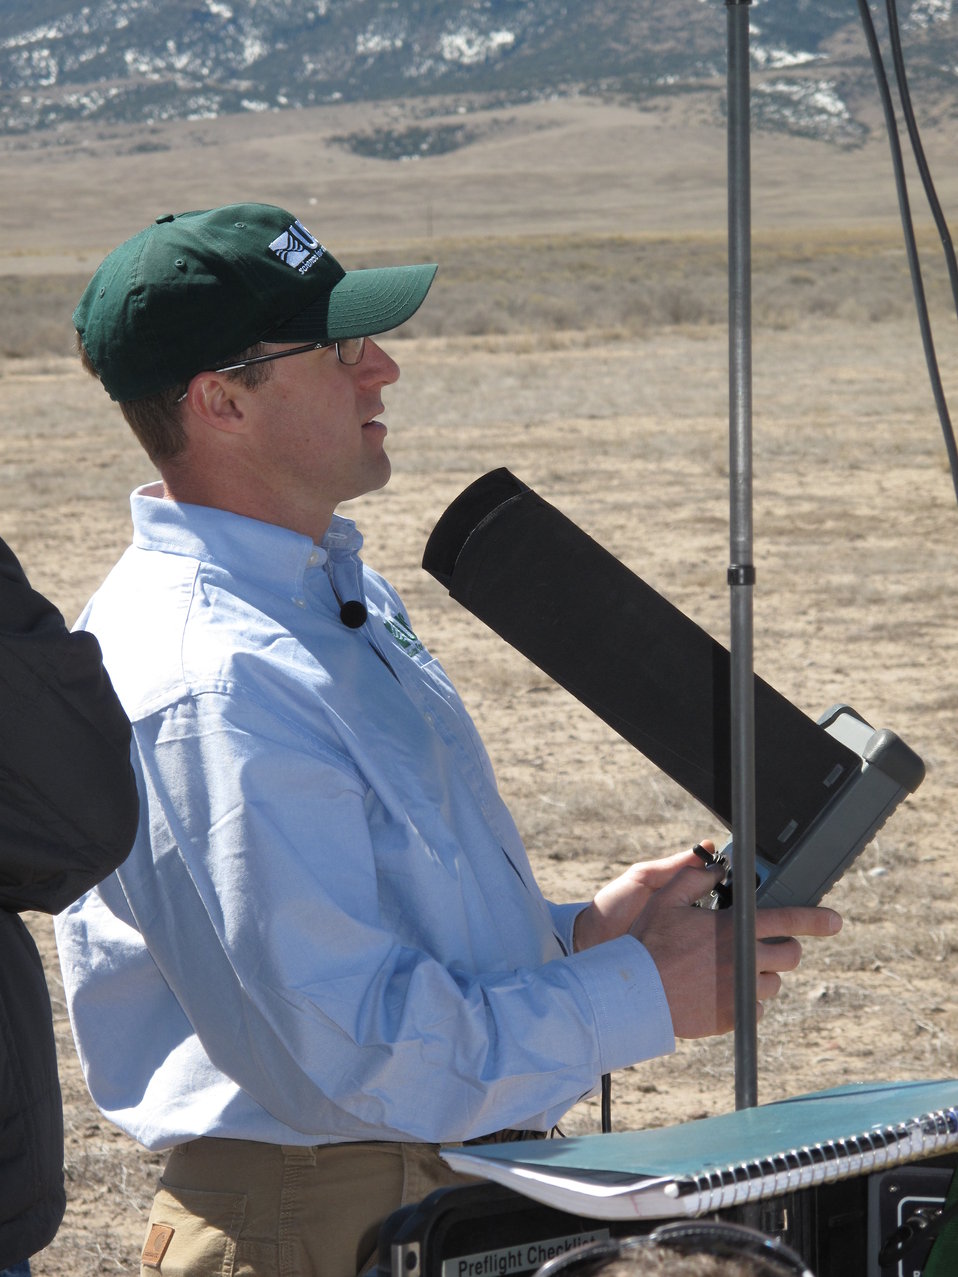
US Geological Survey Flying High

The U.S. Geological Survey, U.S. Fish & Wildlife Service and Bureau of Land Management conducted a demonstration of Unmanned Aircraft Systems (UAS) as a means of surveying migratory birds March 22, 2012. The goal of the feasibility study was to test the UAS technology as a means of surveying migratory Sandhill Cranes roosting on the Monte Vista Wildlife Refuge in the San Luis Valley of Colorado.